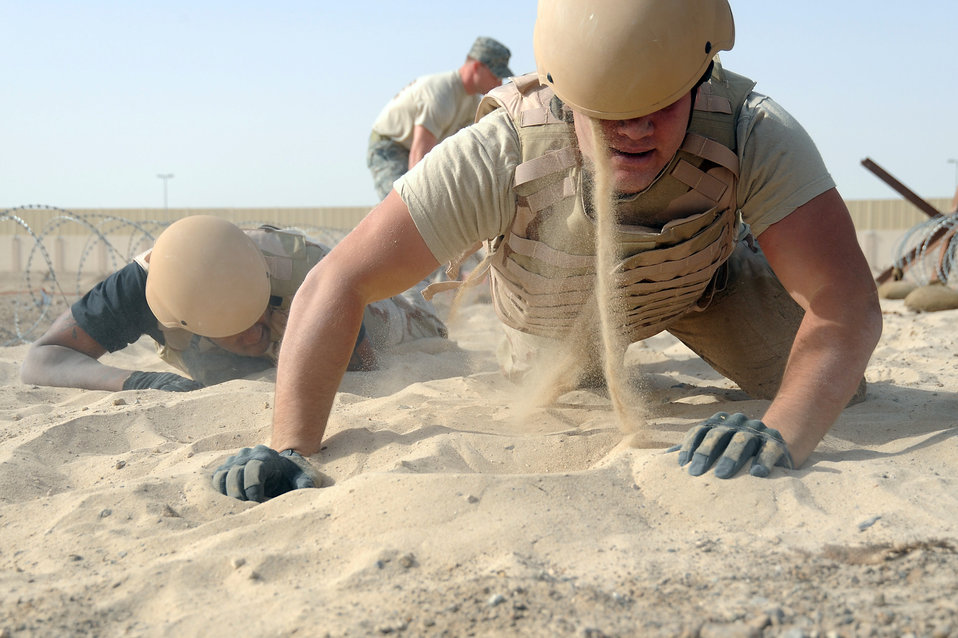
Challenge pushes Airmen, Soldiers

Sand falls from the helmet of Airman 1st Class Bryan Rozier as he gets up after low crawling 25 feet through a sandpit on a Defender Challenge course April 25 at an air base in Southwest Asia. Teams from different units ran the course, testing stamina, strength and brain power. Airman Rozier is assigned to the 380th Expeditionary Civil Engineer Squadron and deployed from Andrews AFB, Md. He hails from Savannah, Ga.